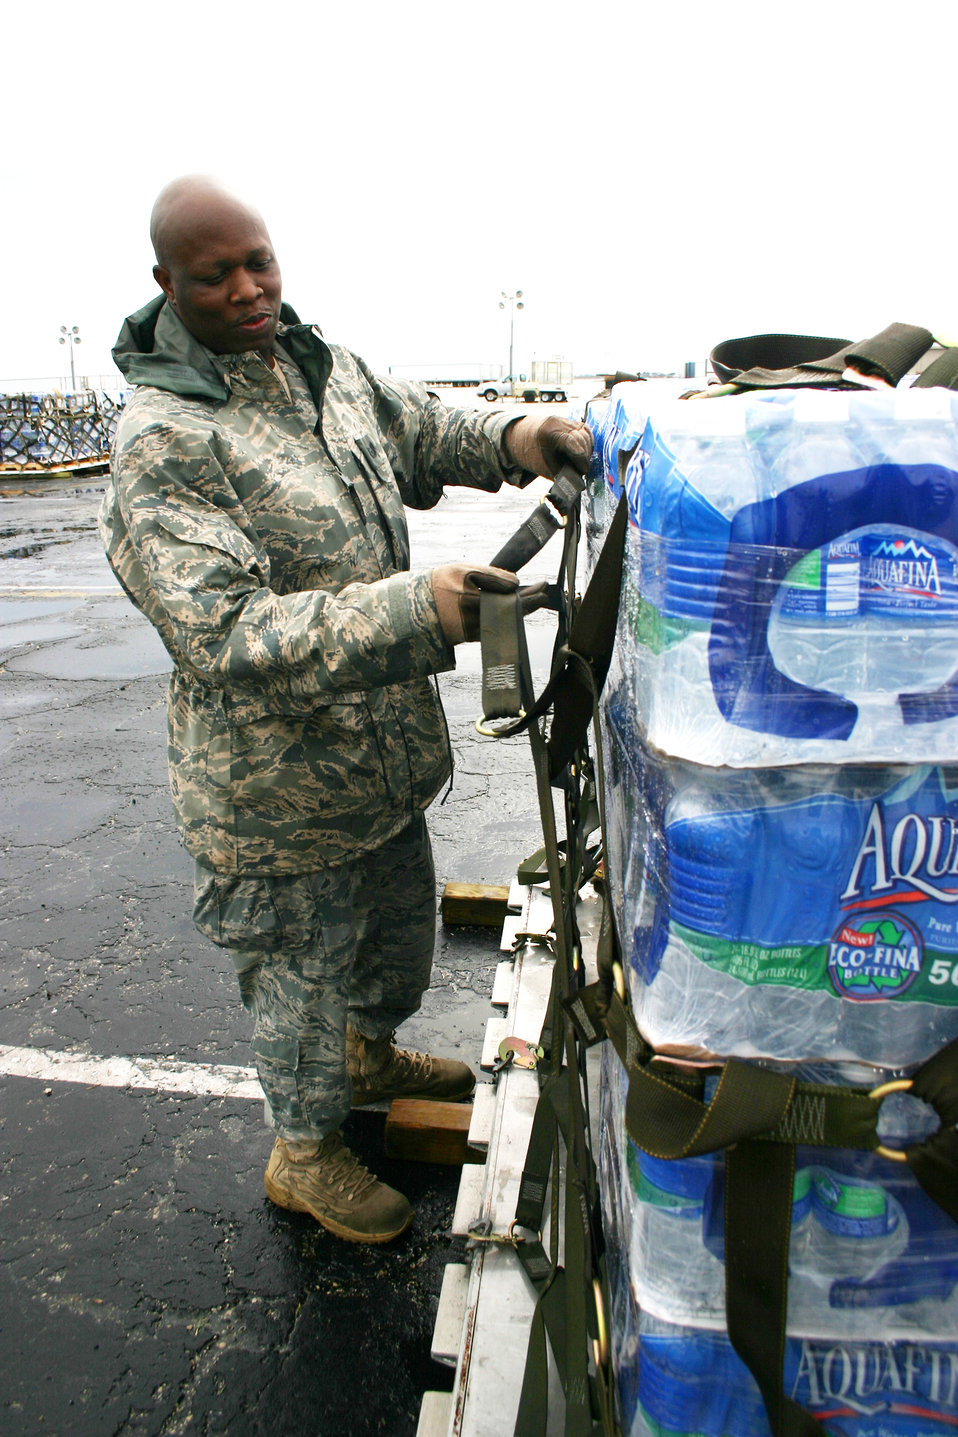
Reservists load supplies for Haiti relief

Tech. Sgt. Vincent Miller builds pallets of water to be delivered to Haiti Jan. 17, 2010, at Homestead Air Reserve Base, Fla. Sergeant Miller is an aerial port specialist assigned to the 70th Aerial Port Squadron at Homestead Air Reserve Base.